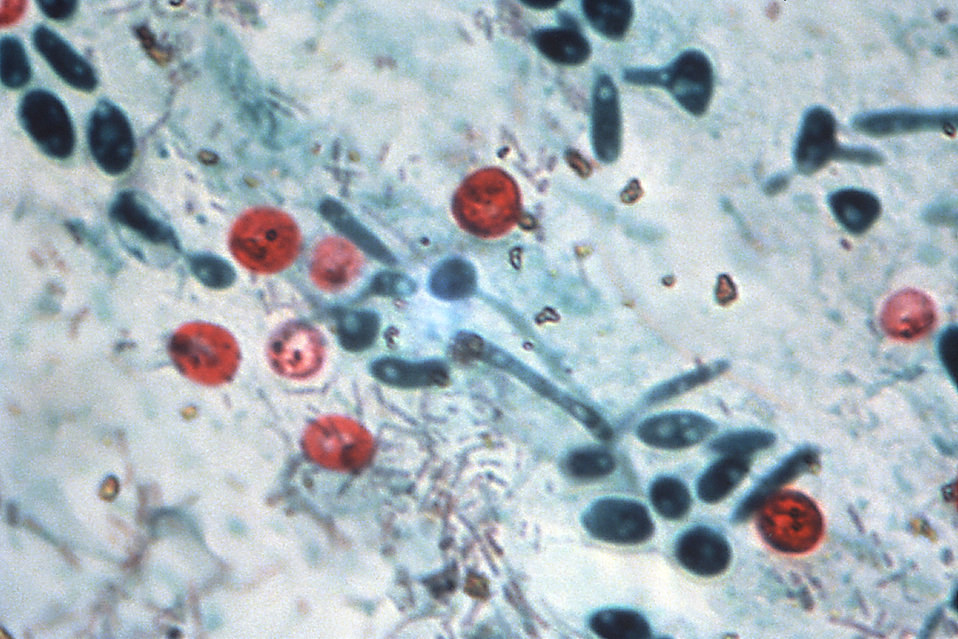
This micrograph of a direct fecal smear is stained to detect Cryptosporidium sp., an intracellular protozoan parasite.